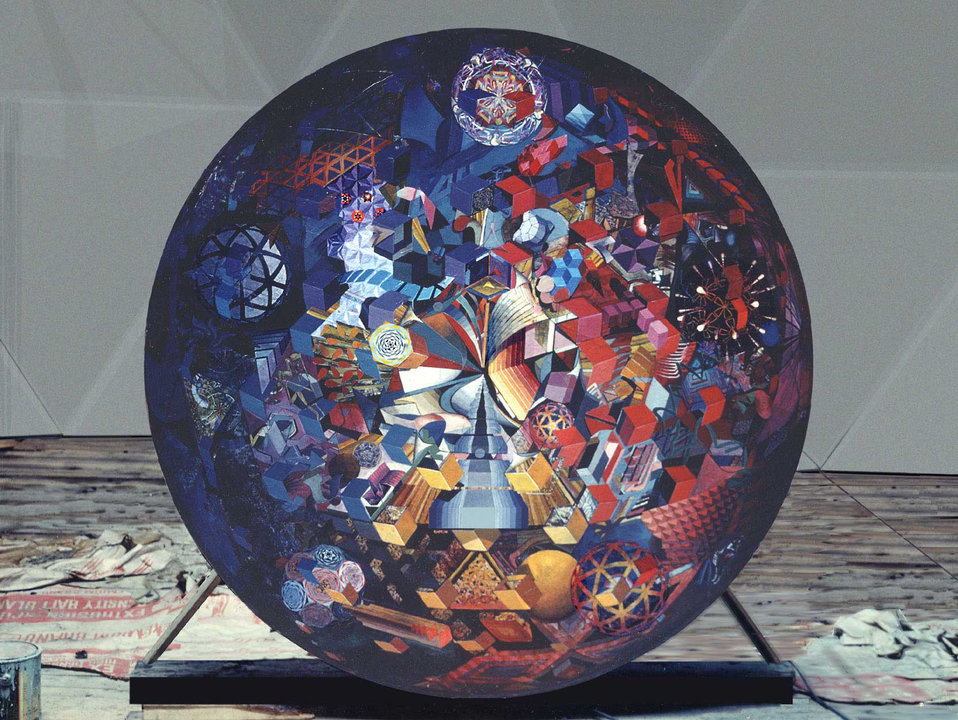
'The Ultimate painting'